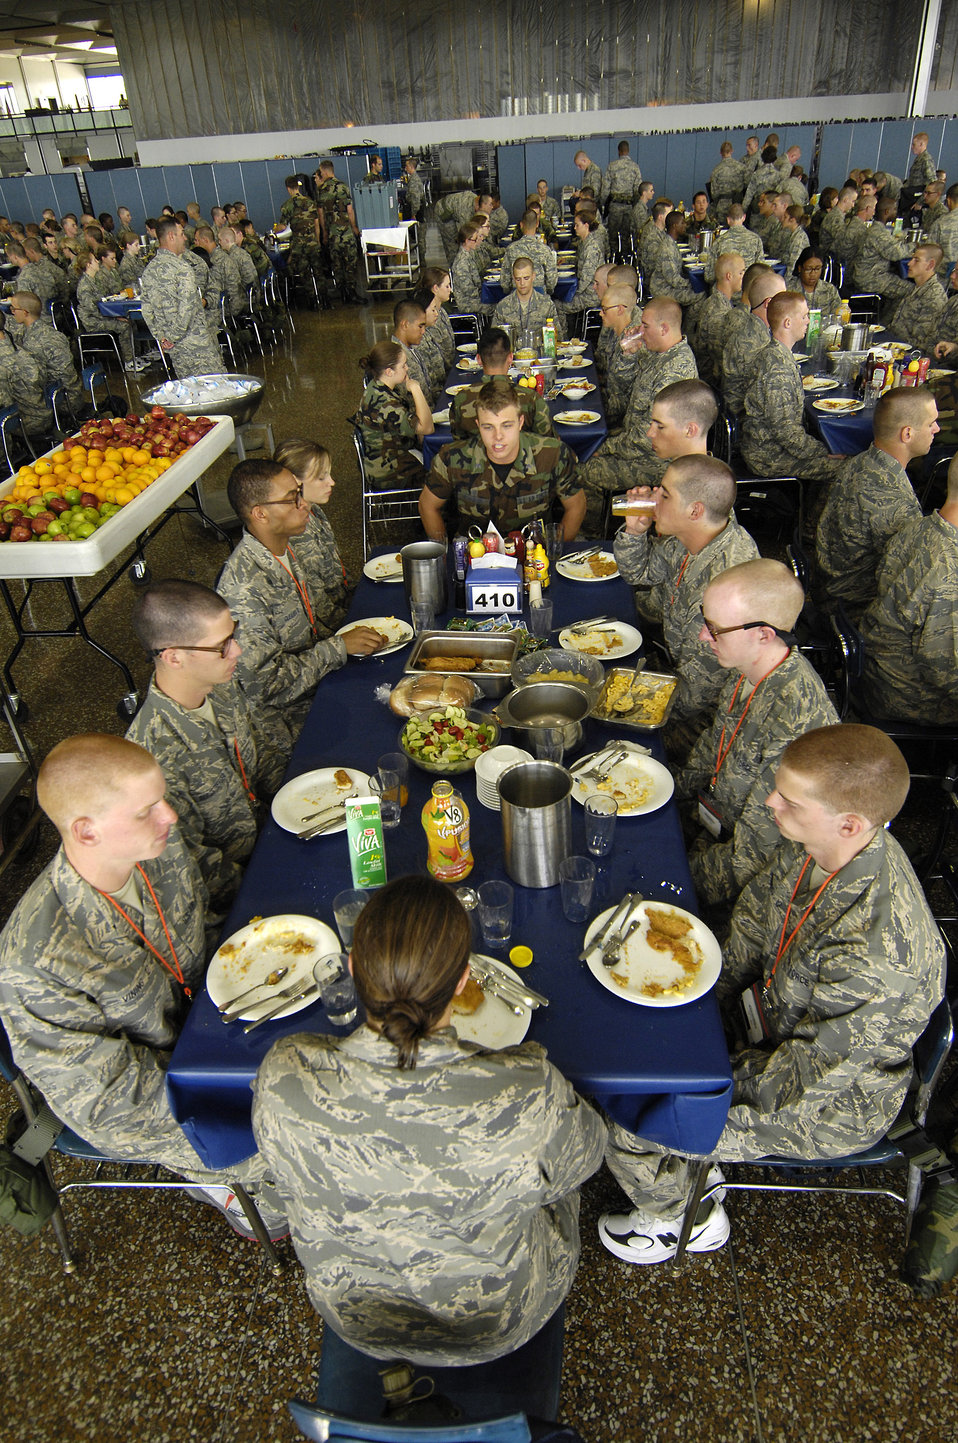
Class of 2012 Arrives

Lunch is served to members of the Class of 2012 in Mitchell Hall on Day Two of the 38 days of Basic Cadet Training June 27 at the U.S. Air Force Academy, Colo. Inprocesing marks the start of 38 days of Basic Cadet Training, which is designed to prepare basic cadet trainees for entry into the cadet wing.